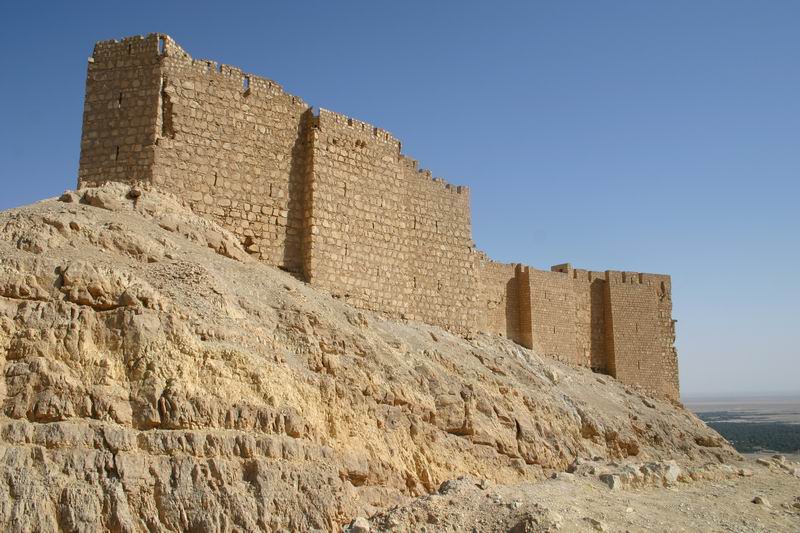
Qalaat ibn Maan, 2004, public domain Mewes 19:40, 30. Okt 2005 (CET)